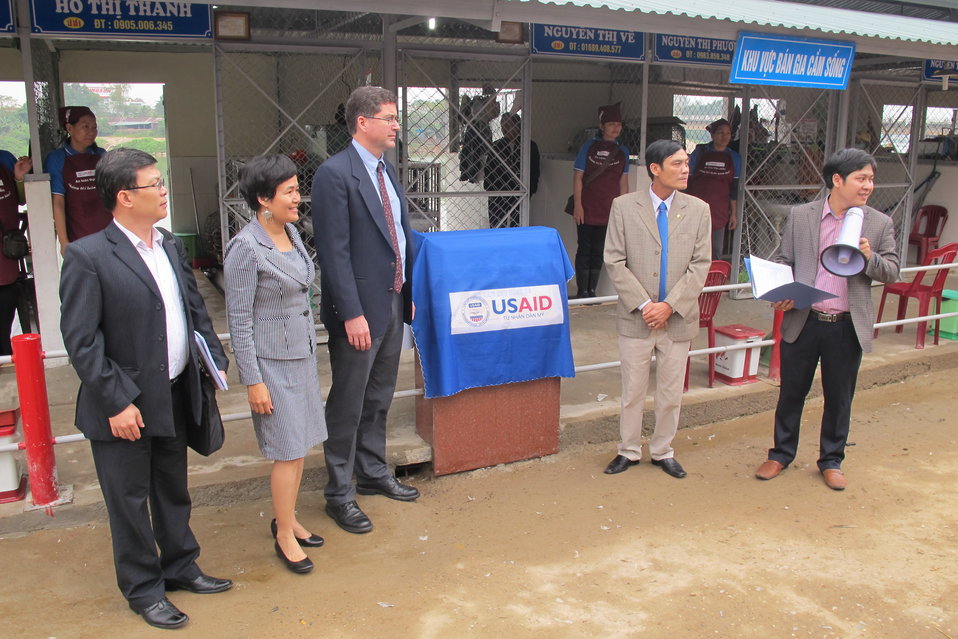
Promoting Hygiene and Sanitation at Dong Ha Poultry Market